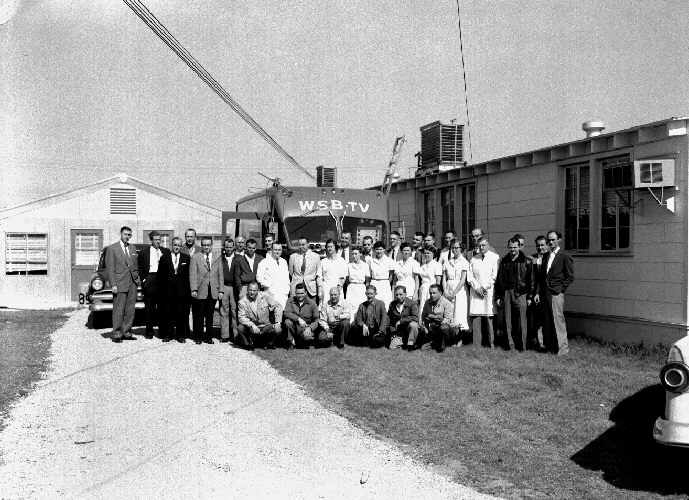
Members of CDC's Wide-Wide World Broadcast team.